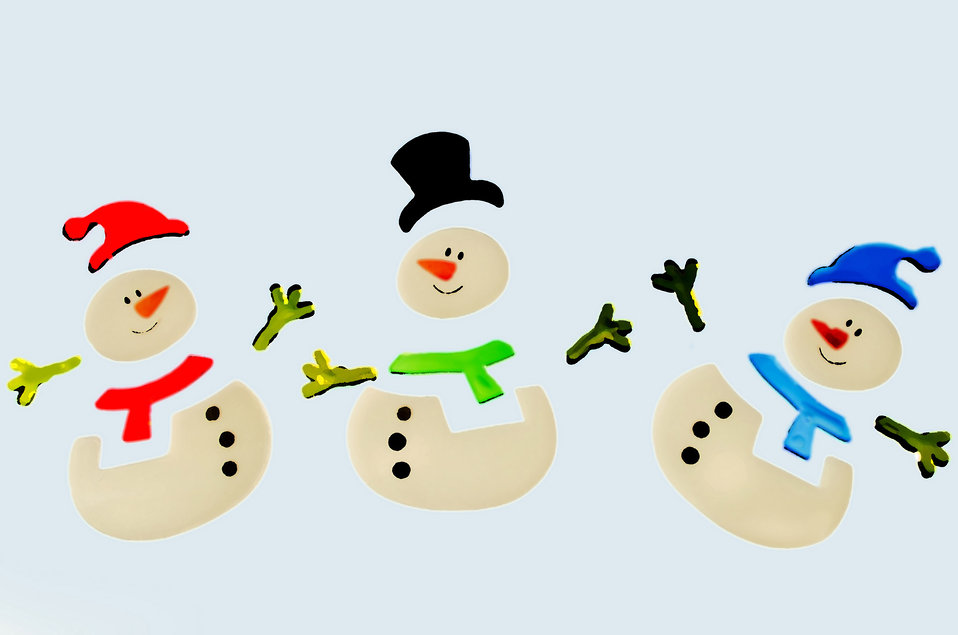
Drawing snowmen.